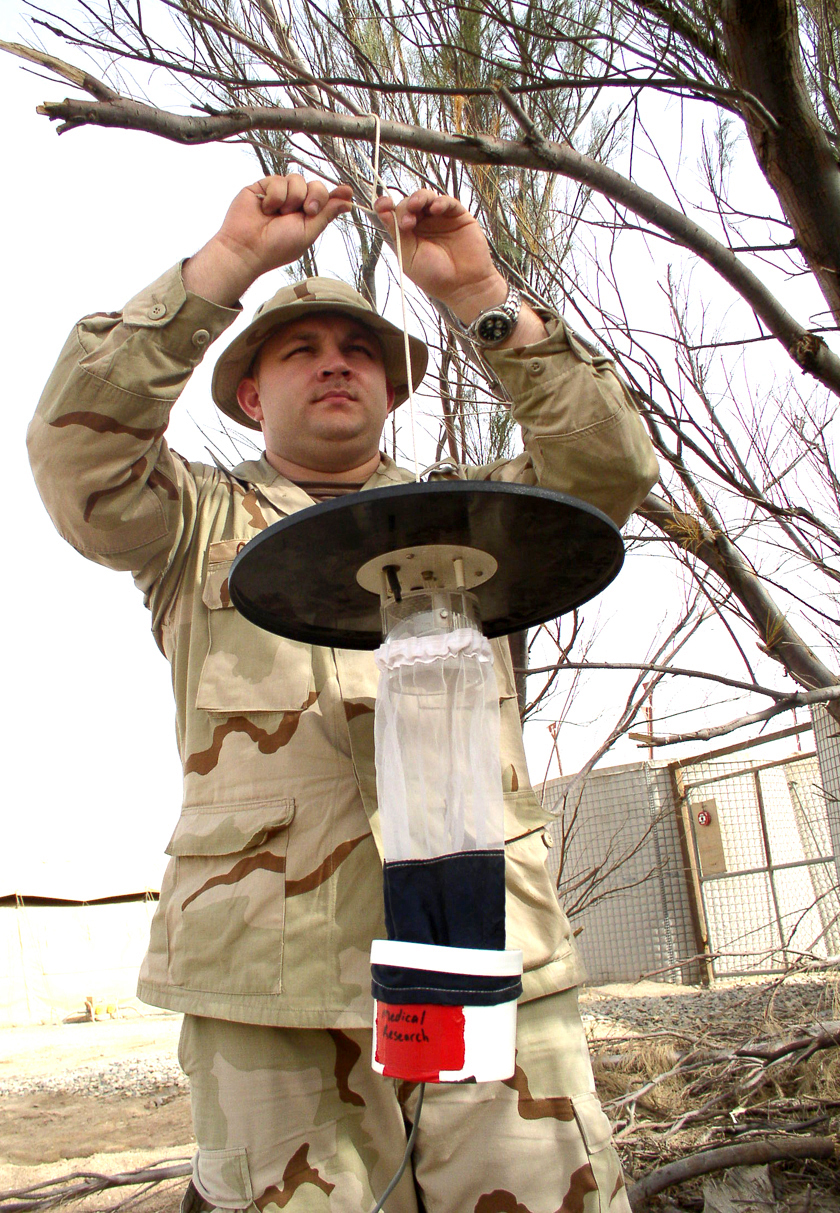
Hangin' traps

TALLIL AIR BASE, Iraq -- Staff Sgt. Chuck Gumbus hangs an insect trap on a tree here. The trap is used to catch sand flies. Airmen have set more than 20 traps on the installation and have caught and examined more than 500 sand flies to see if they are carrying parasites that cause diseases. Sergeant Gumbus is assigned to the 4077th Expeditionary Medical Group.